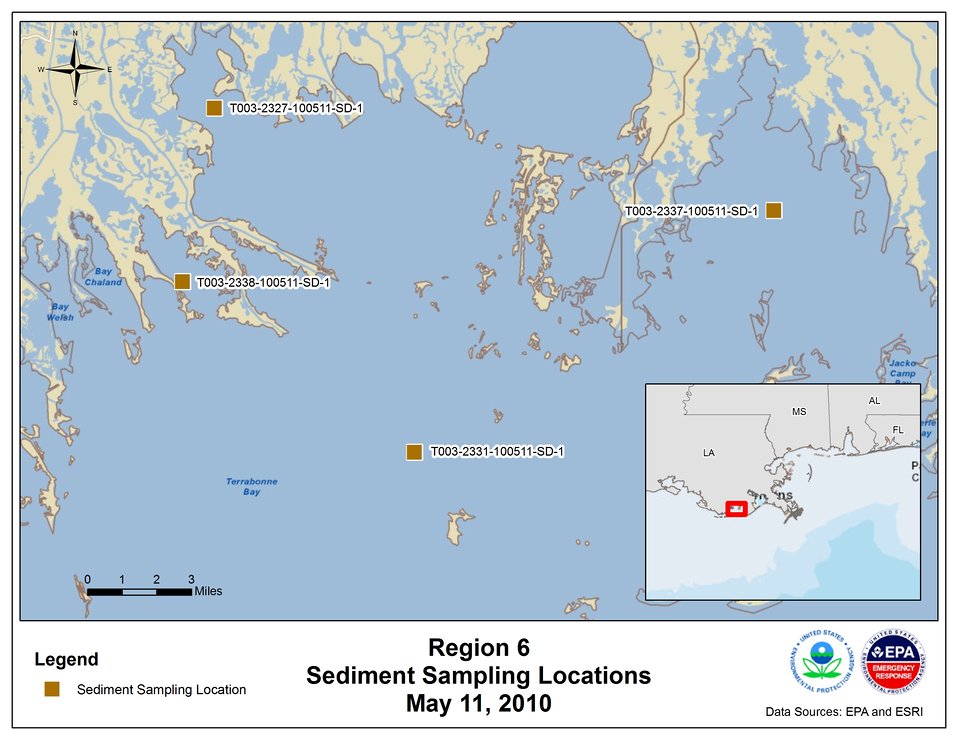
EPA Sediment Sampling Locations May 11, 2010